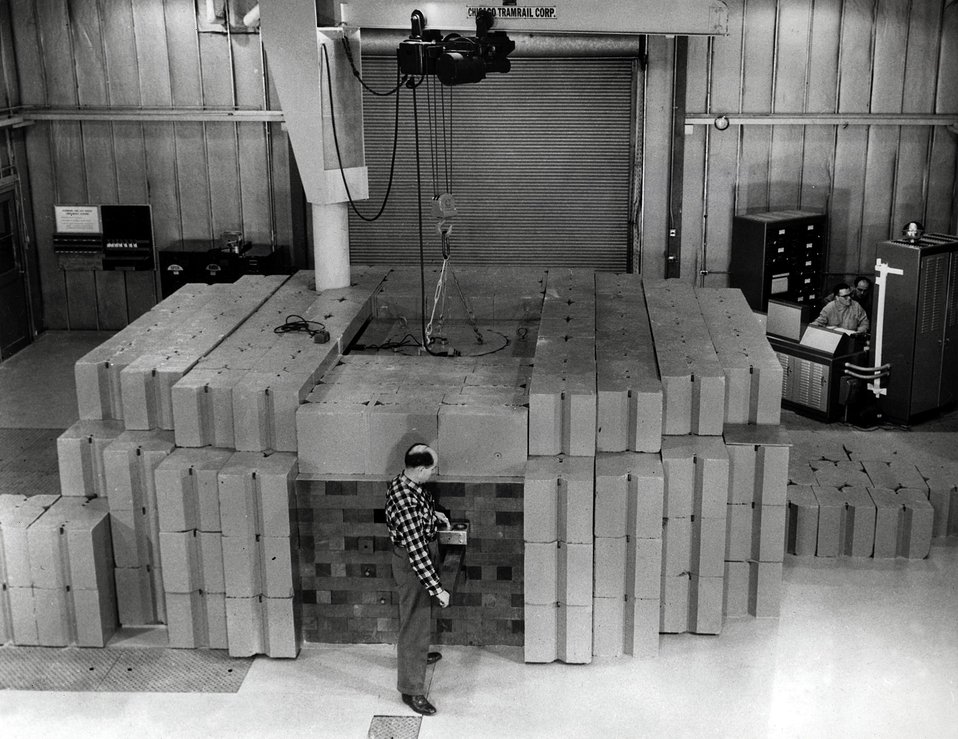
Andrew Selep checking the activity level of a stringer withdraw from the thermal column of the Argonaut reactor at Argonne.
c.1961